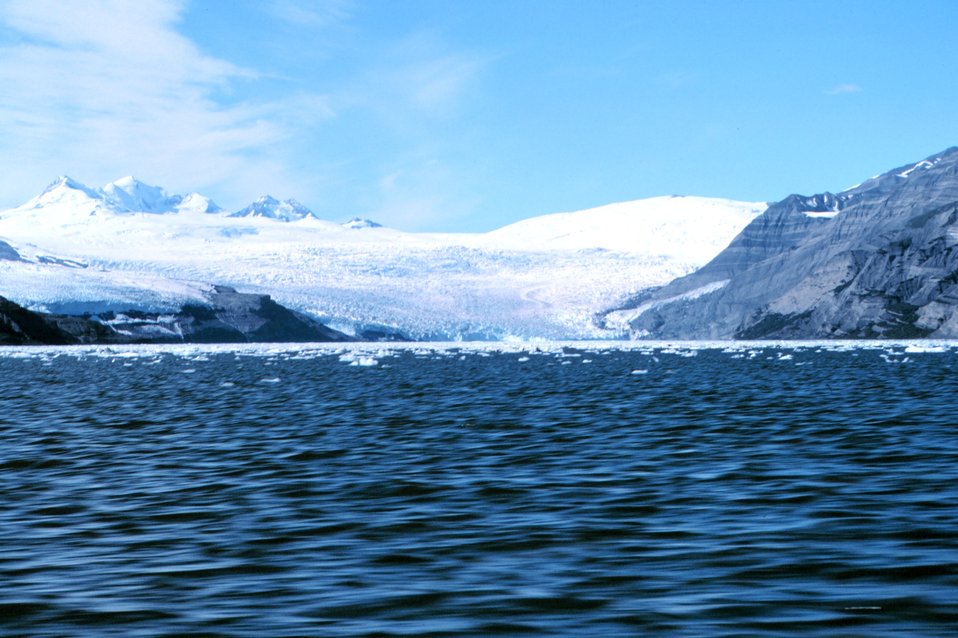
A glacier making its way to the sea in Icy Bay.